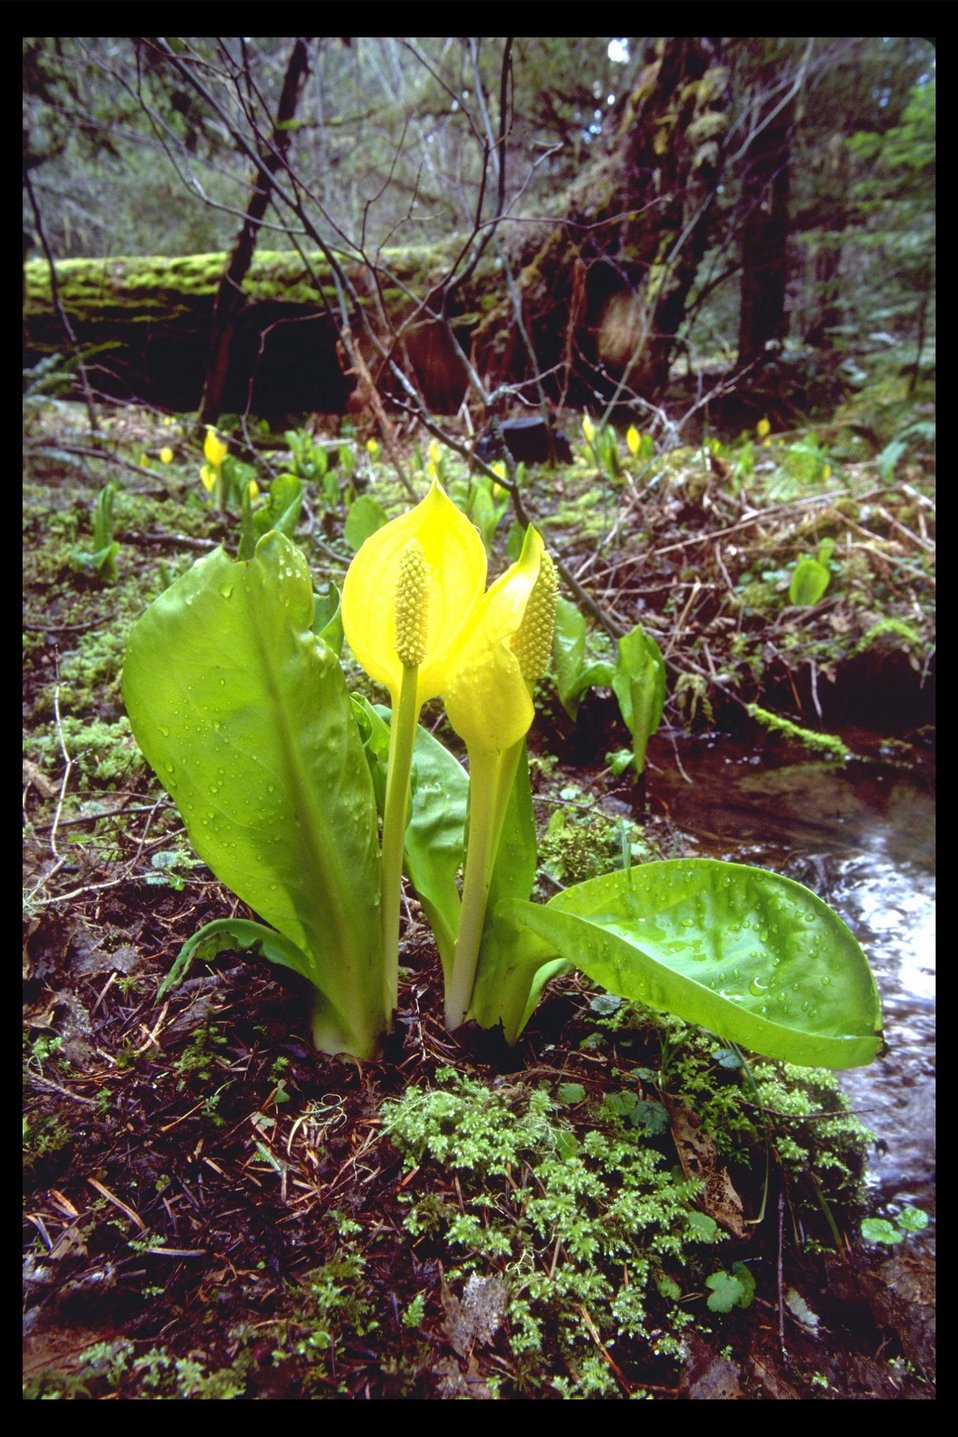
Yellow Skunk Cabbage (Lysichitum americanum) found at Three Horn Campground along Tiller Highway.